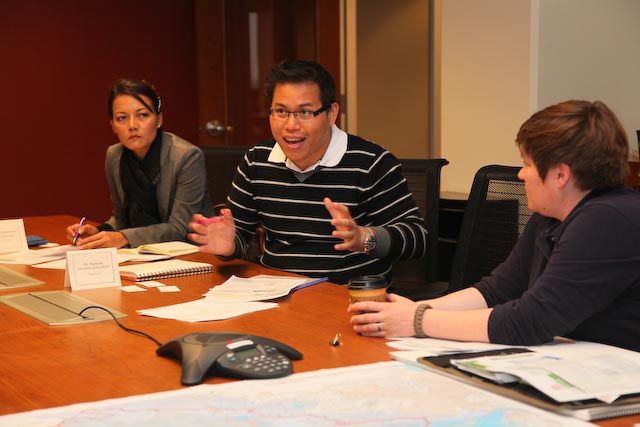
Corps discusses watershed approach with Thai Delegation

Supapap Patsinghasanee (center), a civil engineer with Thailand’s Water Crisis Prevention Center, describes common weather conditions in Thailand during a discussion with U.S. Army Corps of Engineers Sacramento District officials March 30, 2012. The Sacramento District provided briefings to explain on-going projects in the Sacramento-San Joaquin Delta and on the American River to show how the Corps, along with its partners, is addressing flood risk challenges through a watershed approach.